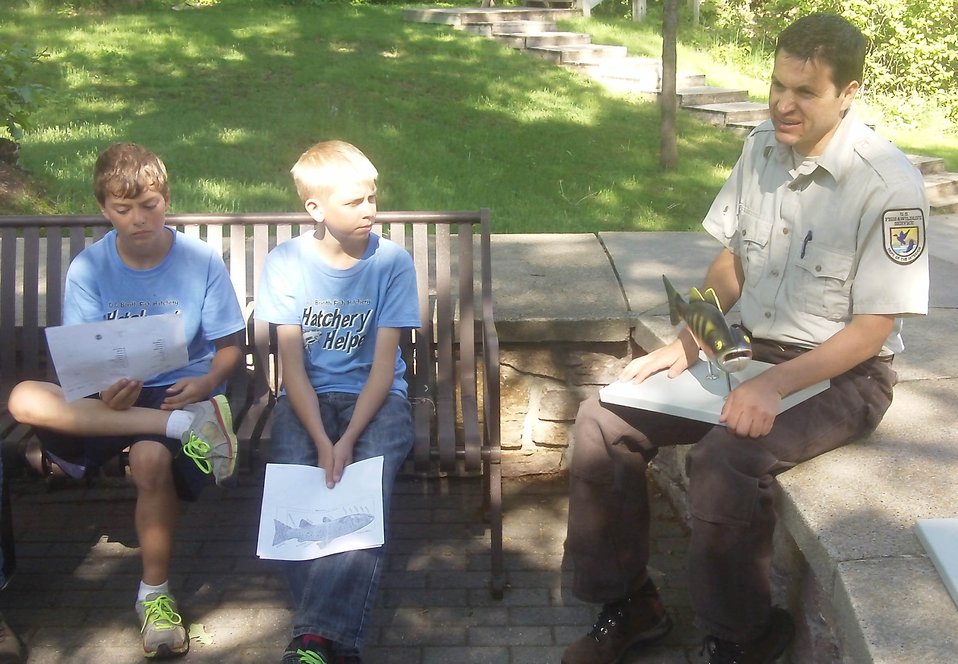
Carlos Martinez, Project Leader at D.C. Booth HNFH, teaches youth about fish and fish anatomy.